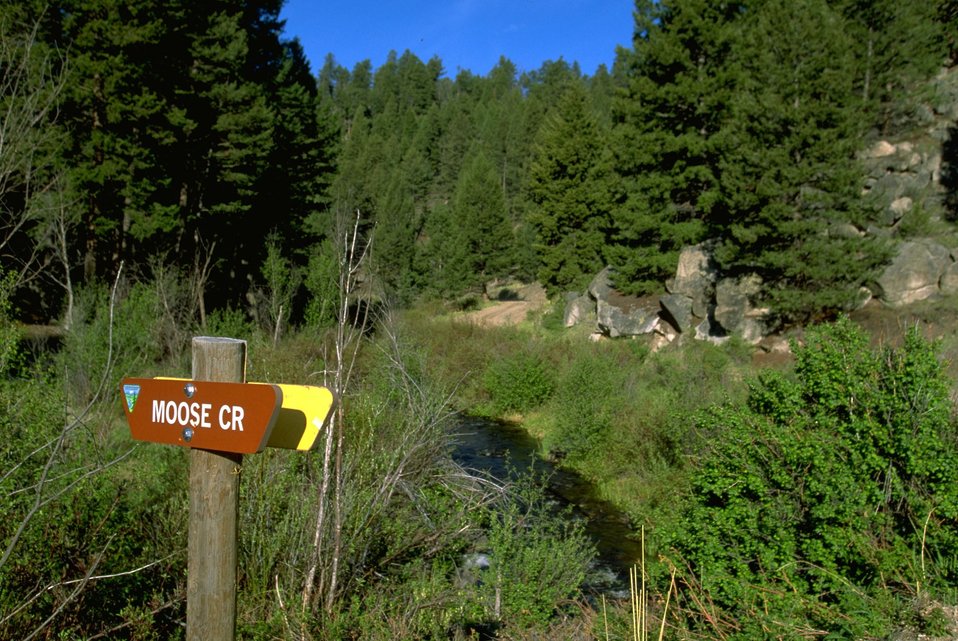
Moose Creek and Sign